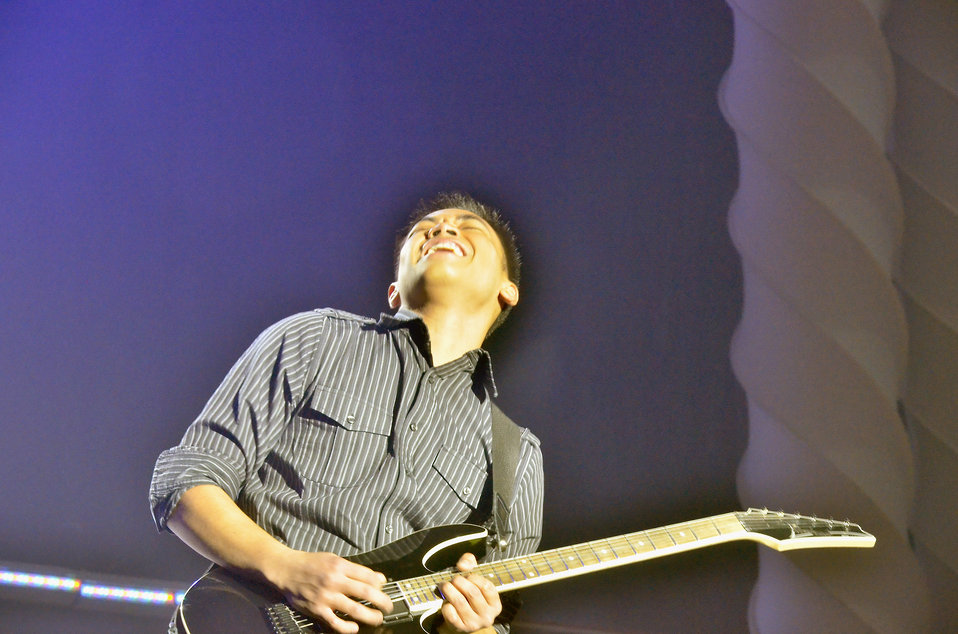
Airmen win honors at worldwide talent search

Airman 1st Class Jonathan Salvador performs an electric guitar solo Dec. 10, 2010, during the Tops in Blue Worldwide Talent Search at Lackland Air Force Base, Texas. Airman Salvador was named best in show and top musician for the competition that allows Airmen to audition for spots on the Tops In Blue team. Airman Salvador is assigned to Minot Air Force Base, N.D.